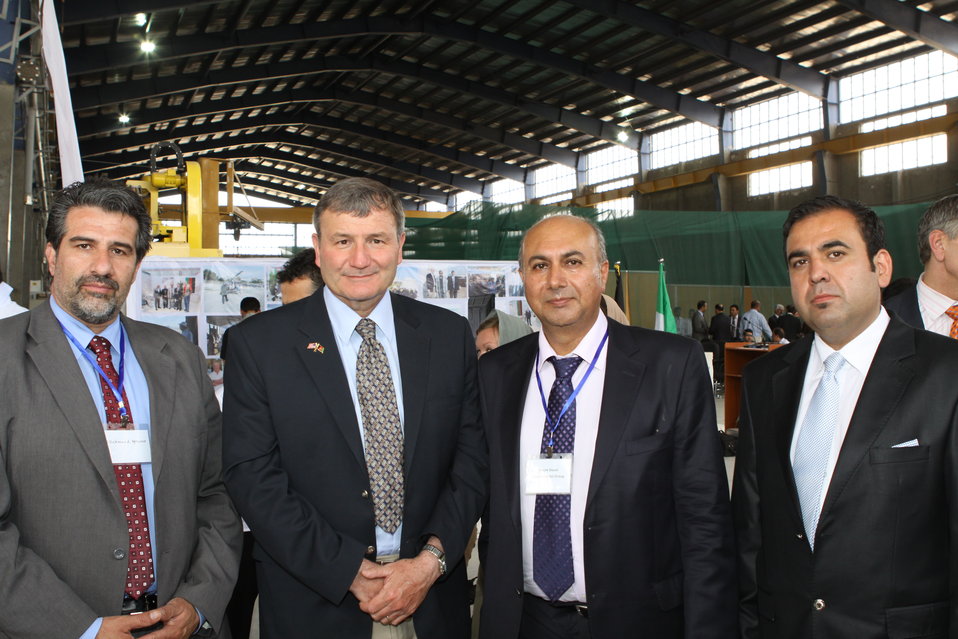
100525 Hirat Marble Conference 561